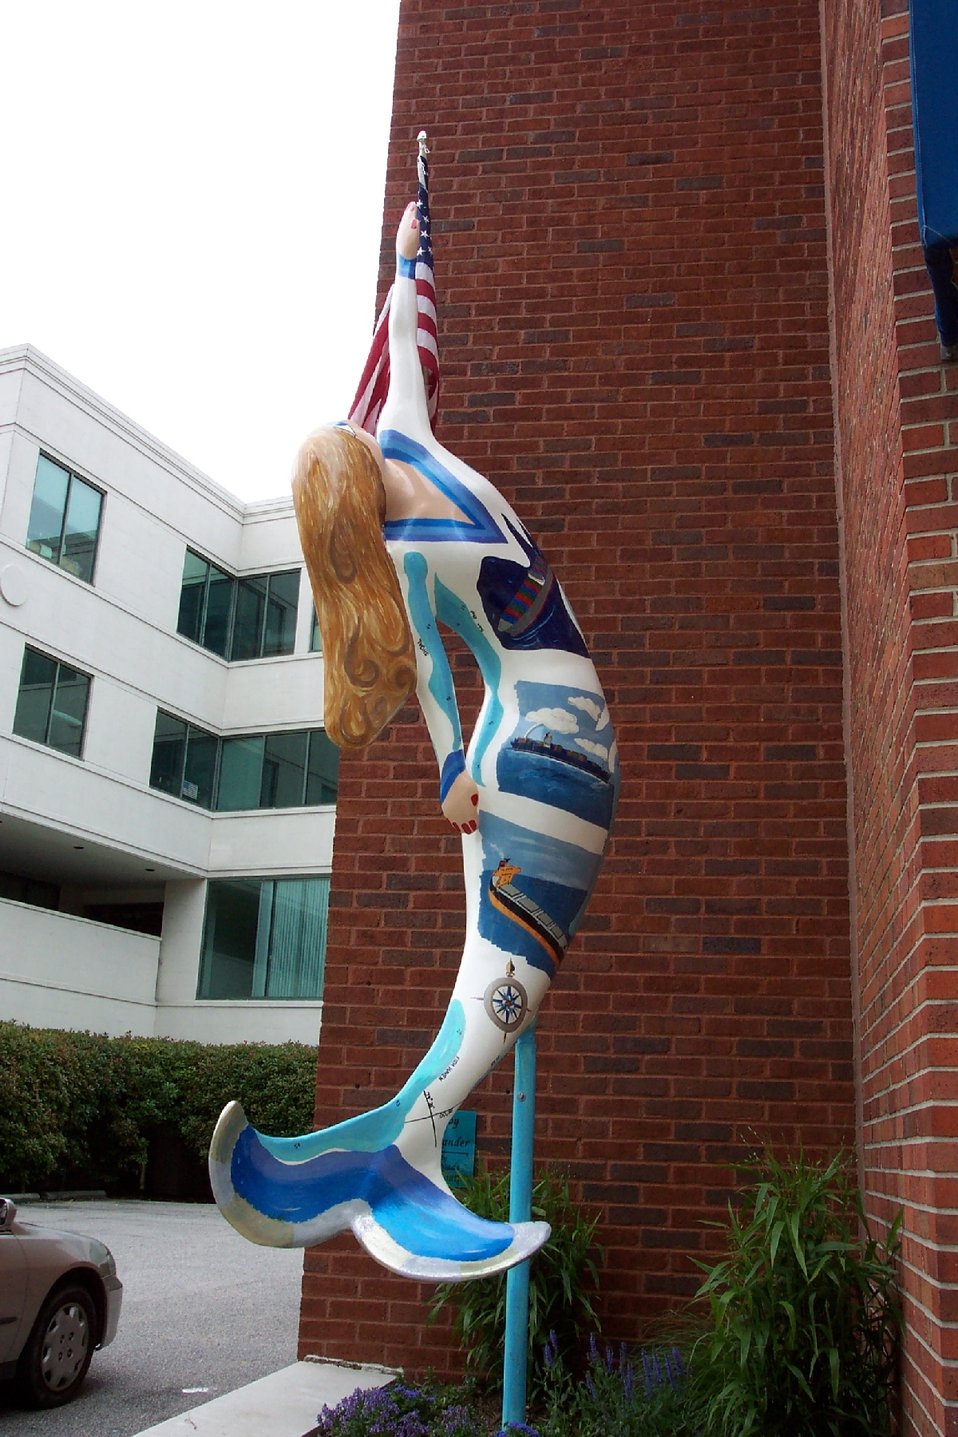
'Ships Ahoy.' A Norfolk mermaid.